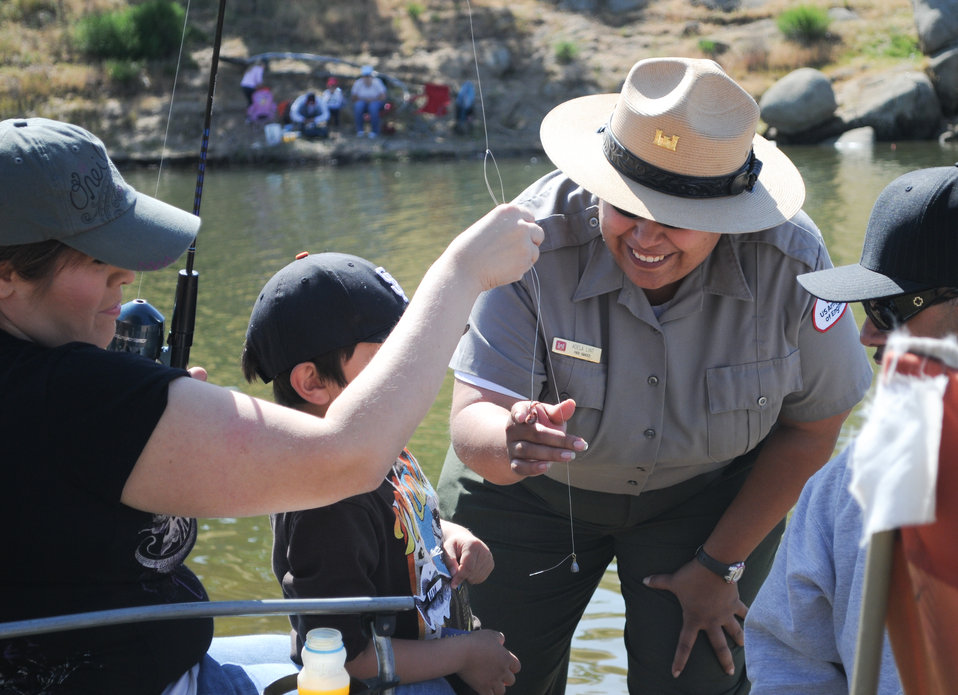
Kids Fishing Day at Hensley Lake

HENSLEY LAKE, Calif. (April 30, 2011) – Eastman Lake park ranger Adela Lint checks a visitor’s hook during the 15th annual Kids Fishing Day here April 30. The Sacramento District’s Hensley and Eastman lakes take turns hosting the event, which provides free loaner gear and clinics on fishing techniques and water safety to help connect kids with the outdoors.